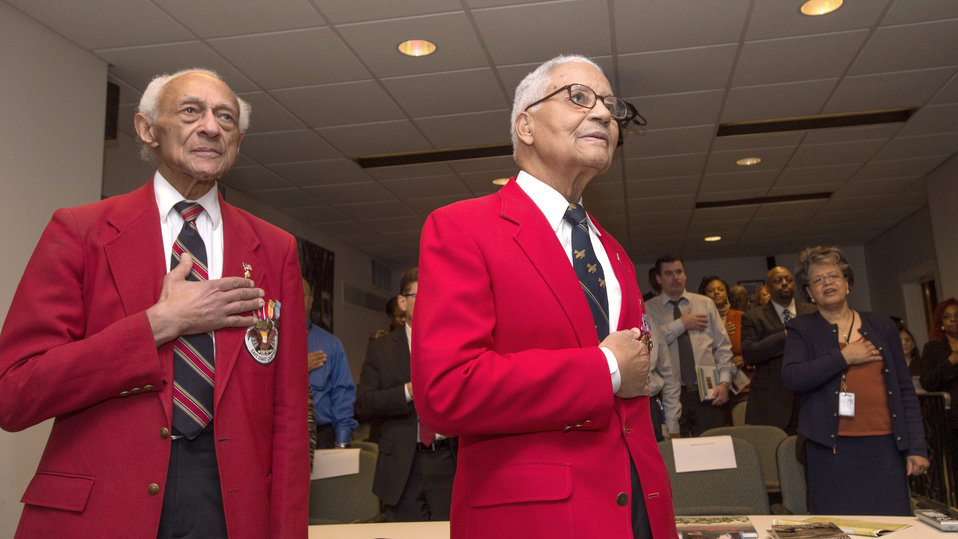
Tuskegee Airmen Incorporated (TAI) National Historian William F. Holton and Pilot and Tuskegee Airman, Colonel Charles Edward McGee, U.S. Air Force (USAF) ret. salute the flag during the national anthem at the U.S. Department of Agriculture's (USDA) Office of the Assistant Secretary for Civil Rights (OASCR) program “In conversation With Tuskegee Airmen”, which honored the airmen’s successes both overseas and at home at USDA in Washington, D.C. on Thursday Mar. 27, 2014. Col. McGee spoke about his experiences in the Army Air Corp (later the Army Air Force and U.S.Air Force) and Holton spoke about his time in the U.S. Navy. Questions from the audience provided several opportunities for discussion about civil rights challenges and how they achieved success and respect.